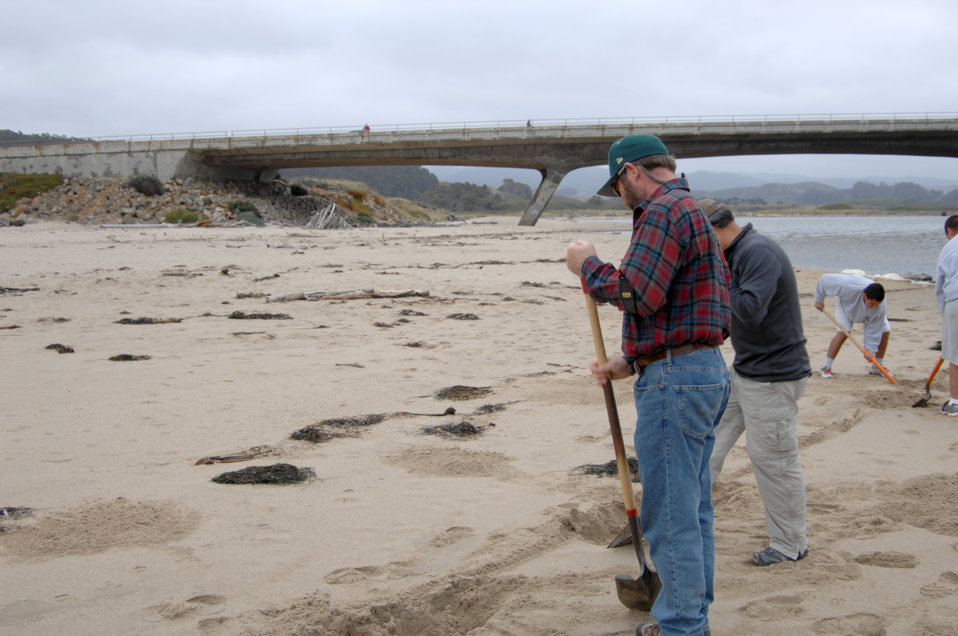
Pescadero Breach 3